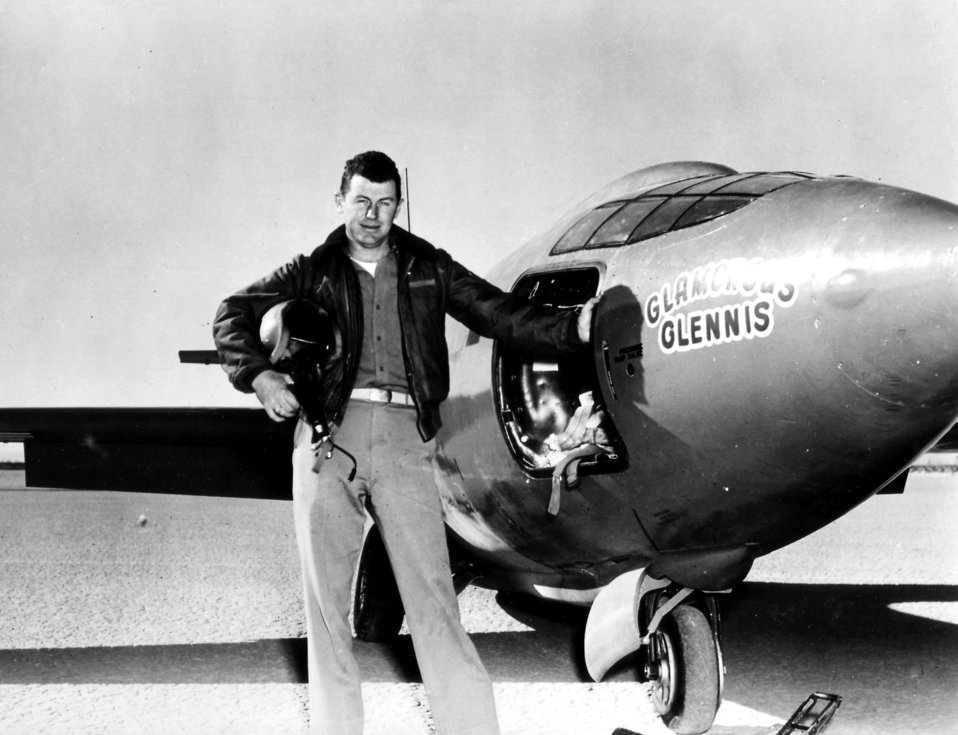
First Mach flight propels Yeager, Air Force into history

Capt. Charles E. Yeager (shown standing next to the Air Force's Bell-built X-1 supersonic research aircraft) became the first man to fly faster than the speed of sound on Oct. 14, 1947.